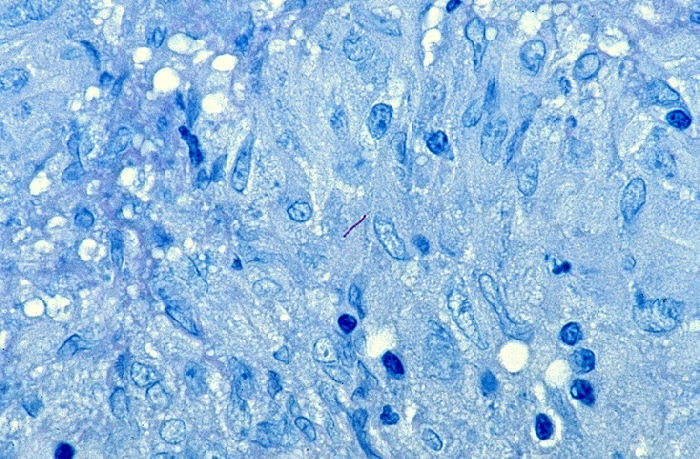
Histopathology of tuberculosis, endometrium. Ziehl-Neelsen stain.